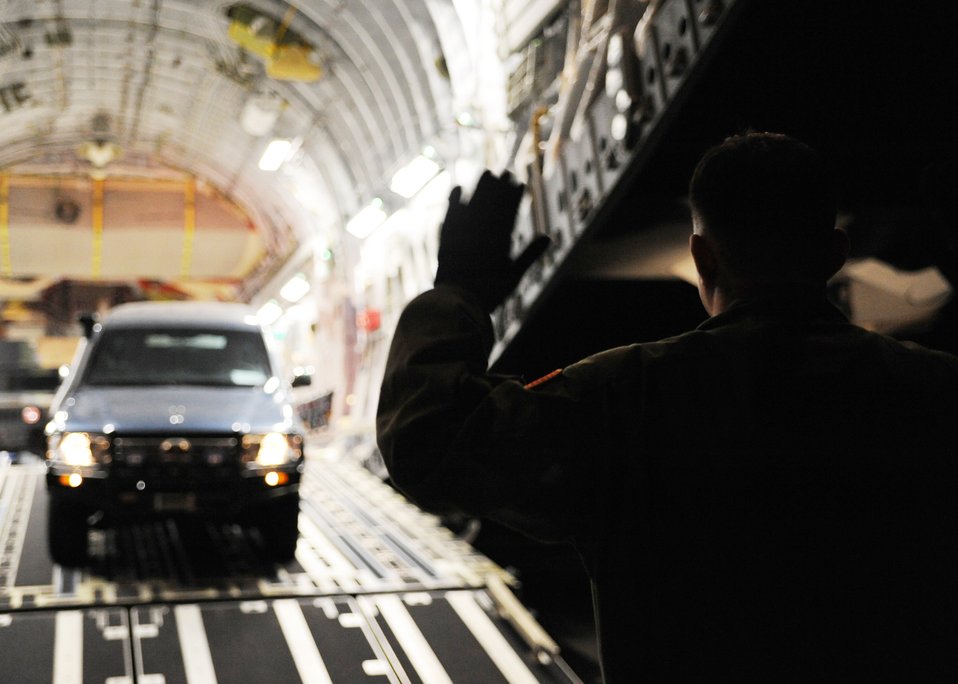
Haiti Humanitarian Effort

Master Sgt. Michael Lang marshals a sport utility vehicle off a C-17 Globemaster III in Port-au-Prince, Haiti, Jan. 15, 2010. Air Mobility Command is responding with people and equipment to aid the humanitarian efforts in Haiti. Sergeant Lang is a loadmaster with the 317th Airlift Squadron.